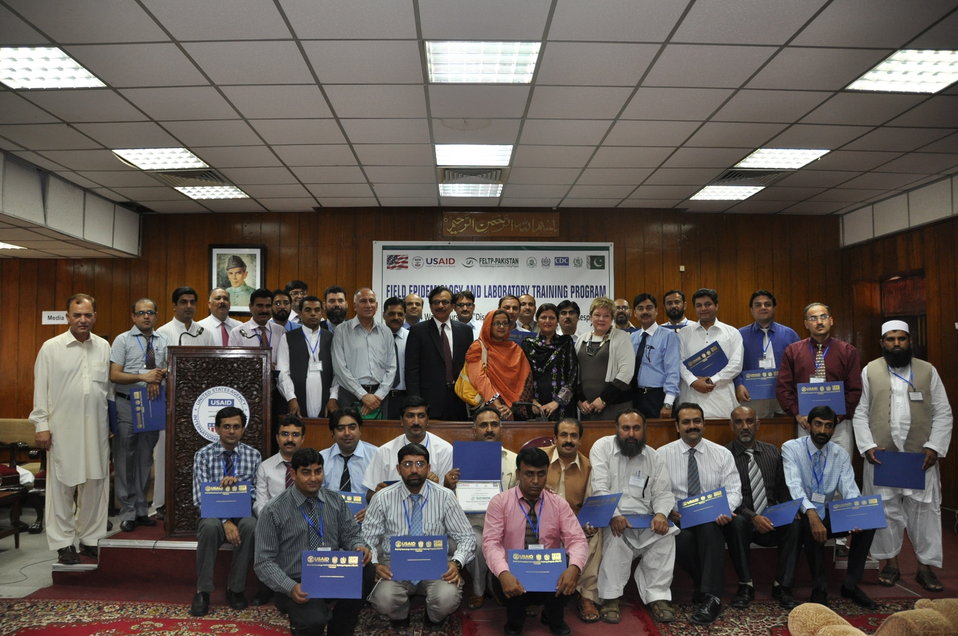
Field Epidemology and Laboratory Training Program